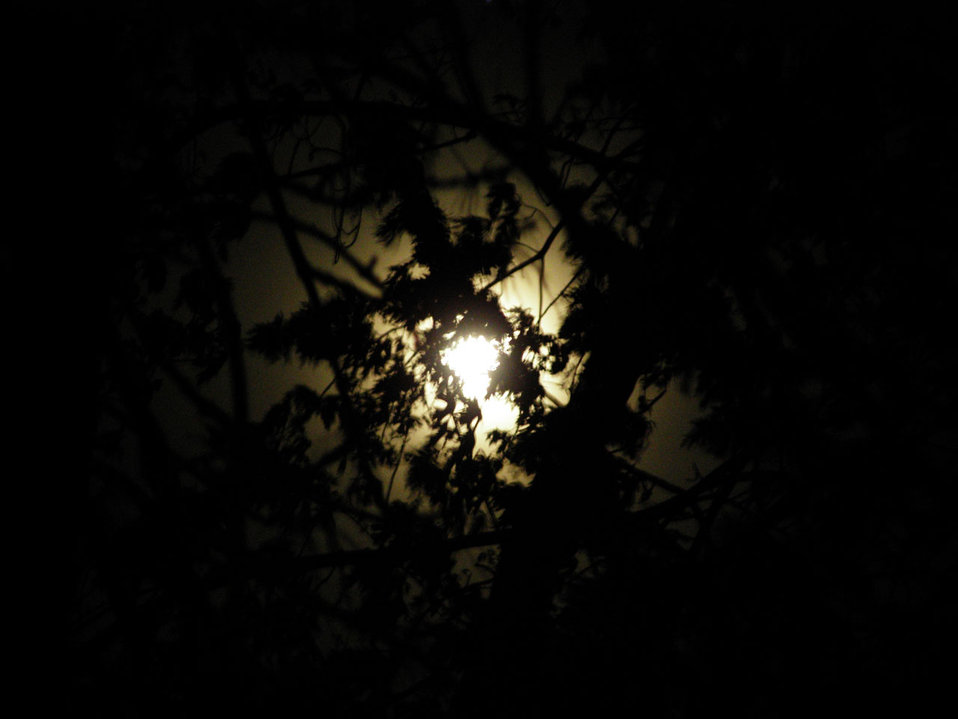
Moonlight

Moon light through leaves.